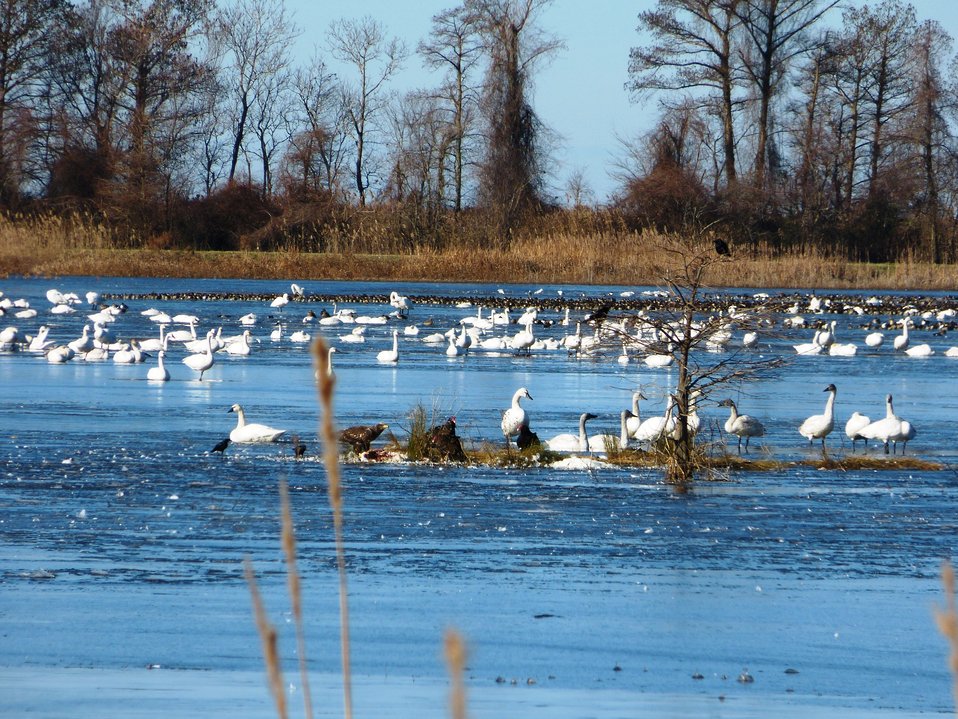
Eagle and other birds on an icy lake

At Mattamuskeet National Wildlife Refuge in North Carolina. The Refuge’s prime location along the Atlantic Flyway makes it a vitally important stopover for wintering waterfowl.

In total, the Refuge attracts more than 200,000 ducks, geese and swans from November through February.